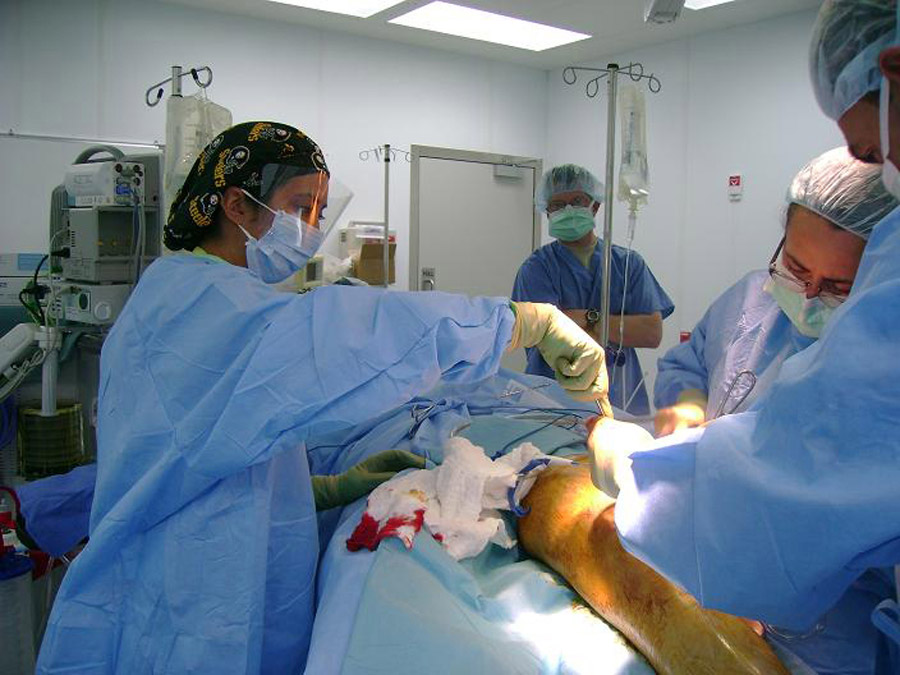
Bagram medical staff 'Smooth Operators'

1st Lt. Sherry Veriato (left to right) Private 1st Class Jonathan Kenyon, Maj. (Dr.) Elizabeth Renza and Maj. (Dr.) Christopher Lebrun irrigate and debride an Afghan national's leg Aug. 5 at the Craig Joint-Theater Hospital, in Bagram, Afghanistan. The man's leg was injured by an improvised explosive device.